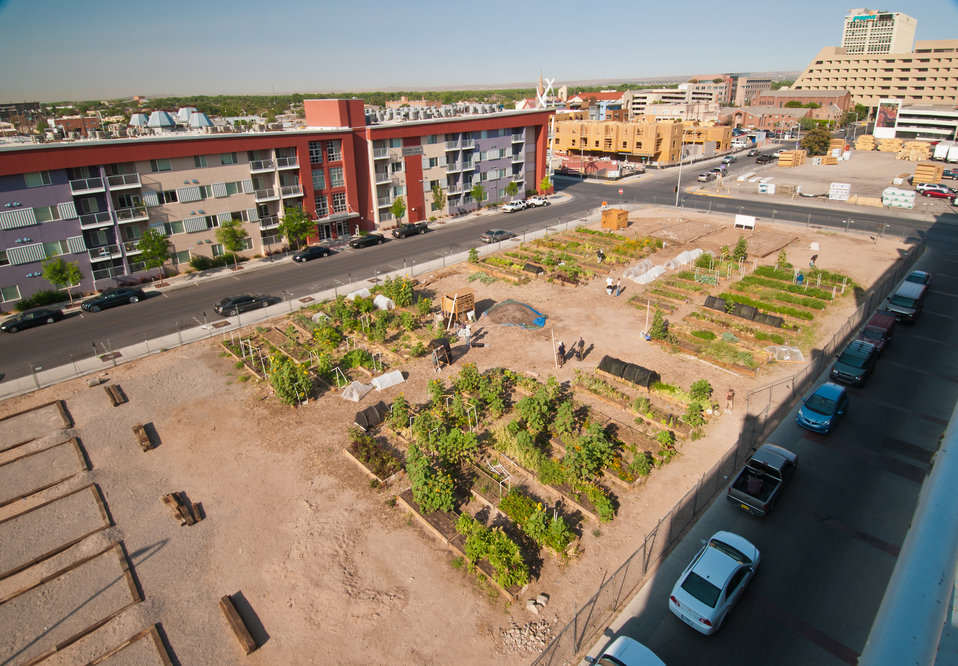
The La Montanita Co-op Veteran Farm Project (VFP) funded through the U.S. Department of Agriculture's (USDA) Agricultural Marketing Service (AMS) Specialty Crop Grant program provides veterans workshops on sustainable farming practices, hands-on gardening and farming experience. This collaboration between La Montanita Co-op, Downtown Action Team, the Veteran’s Administration, the New Mexico Department of Agriculture and Holistic Management International provides the initial training for veterans to start or work at sustainable agriculture businesses. VFP grows produce at their Alvarado Urban Farm in Albuquerque, NM year round. The VFP gardens will supply a stand at the Veteran Affairs (VA) Farmers’ Market once a week over the summer, feed project participants and fill Community Supported Agriculture (CSA) boxes for low-income families in Albuquerque, New Mexico.